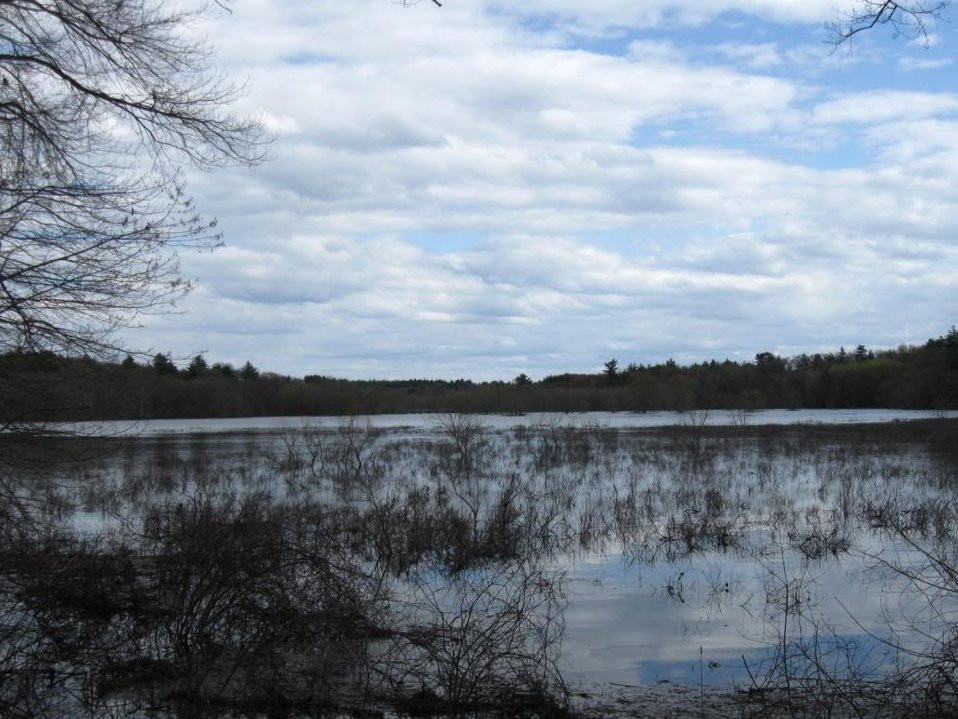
Great Meadows National Wildlife Refuge

Credit: Zachary Cava/USFWS

Great Meadows National Wildlife Refuge is part of the Eastern Massachusetts National Wildlife Refuge Complex.